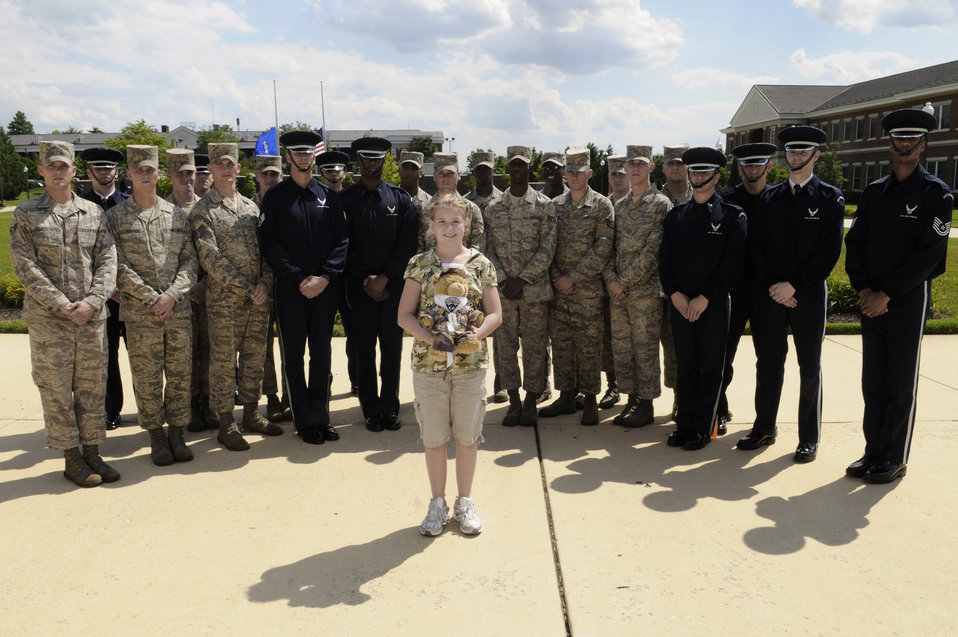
Bolling officials welcome Hero Hugs founder with open arms

Bailey Reese, founder and president of the nonprofit organization Hero Hugs, poses for a photo with members of the Air Force Honor Guard drill team during a July 7 visit to Bolling Air Force Base, D.C. Bailey started Hero Hugs as a way to say